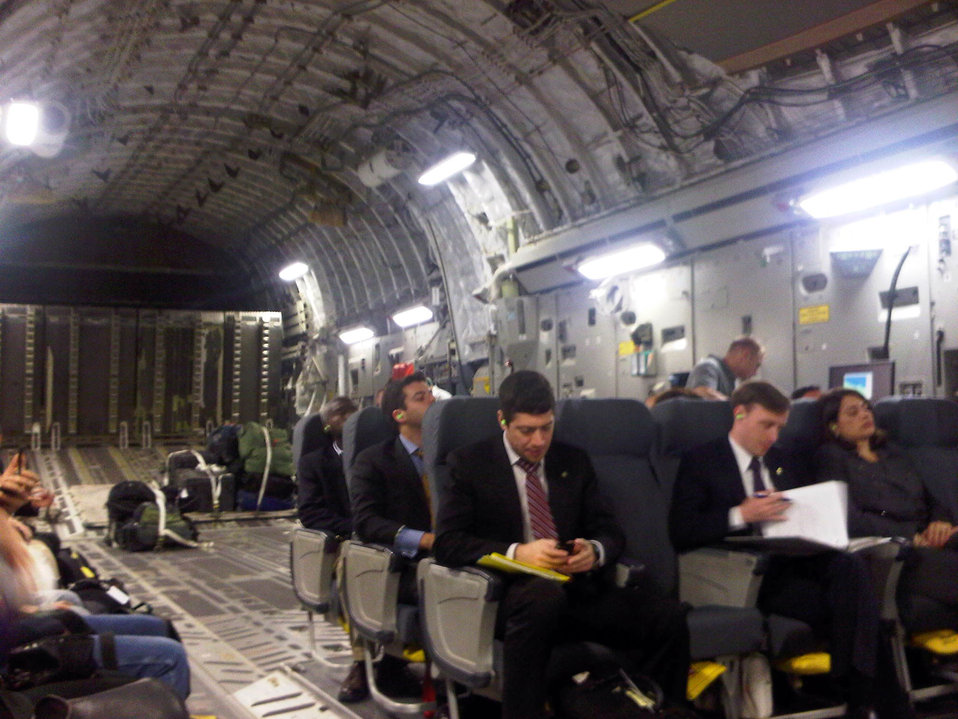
State Department Staff Prepare To Arrive in Libya

U.S. Department of State staff prepare to arrive in Tripoli, Libya, on the C-17 on October 18, 2011.